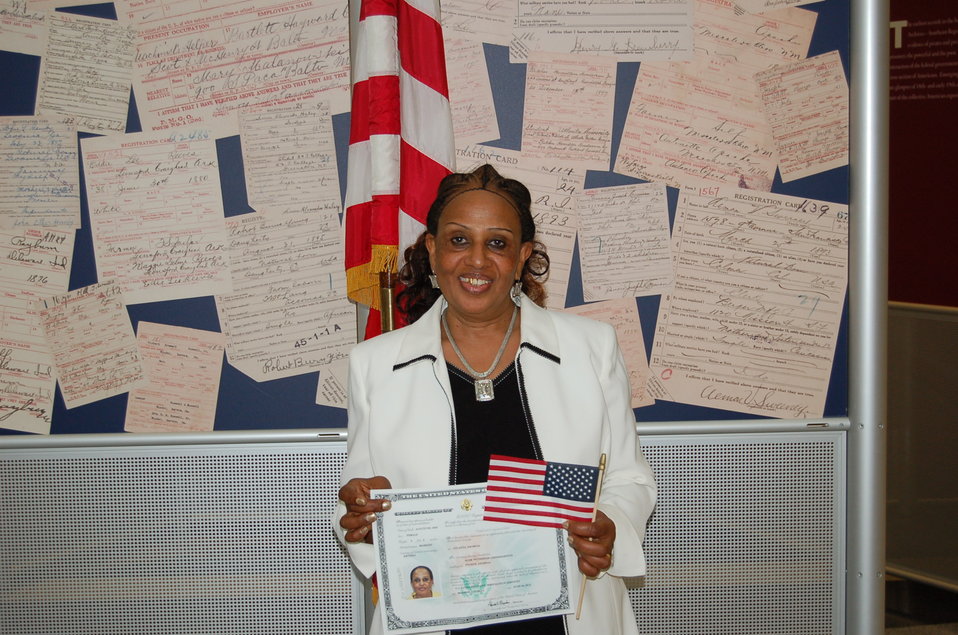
New Citizens